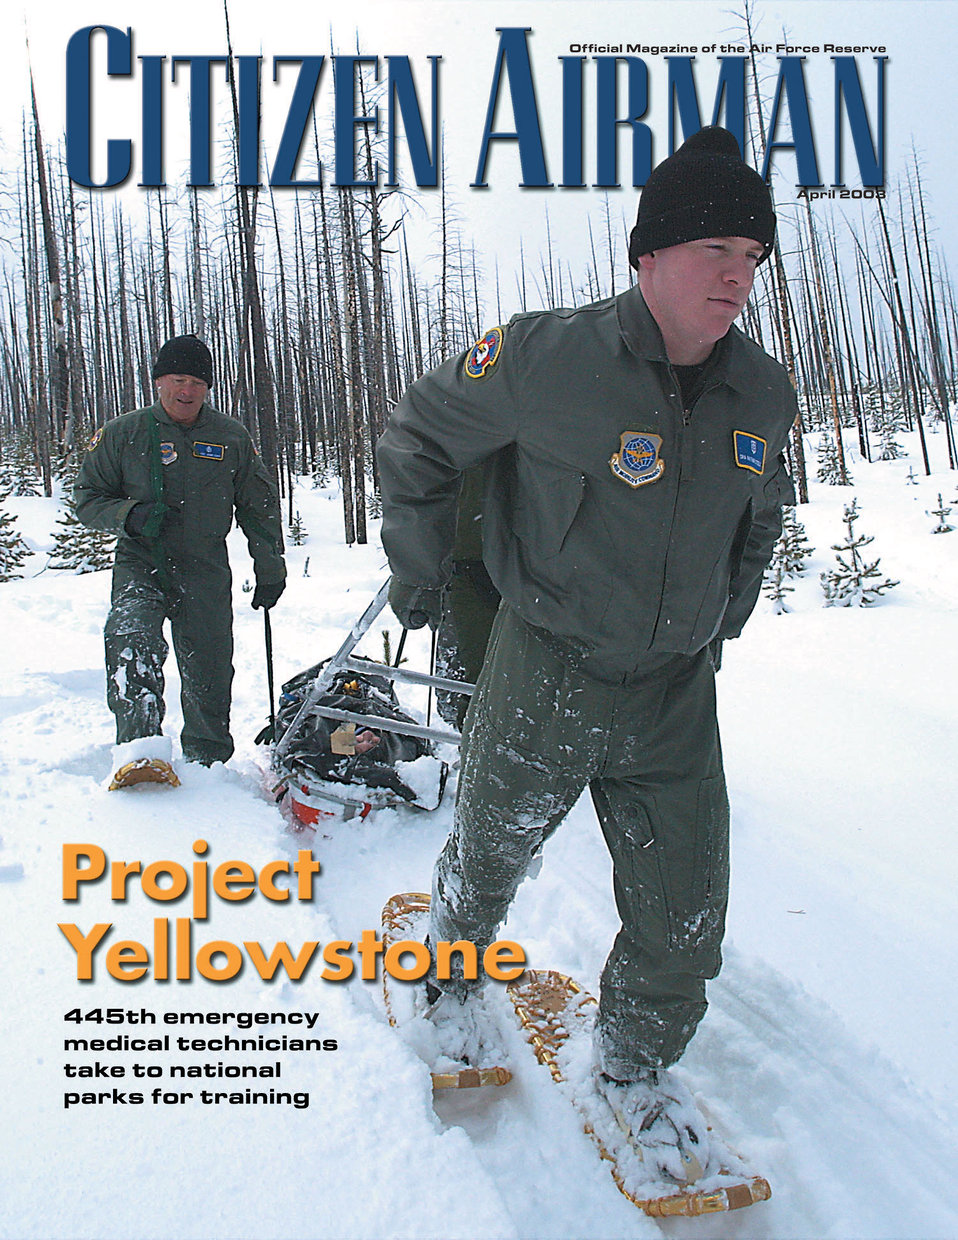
April Citizen Airman

The April edition of Citizen Airman magazine is now available.